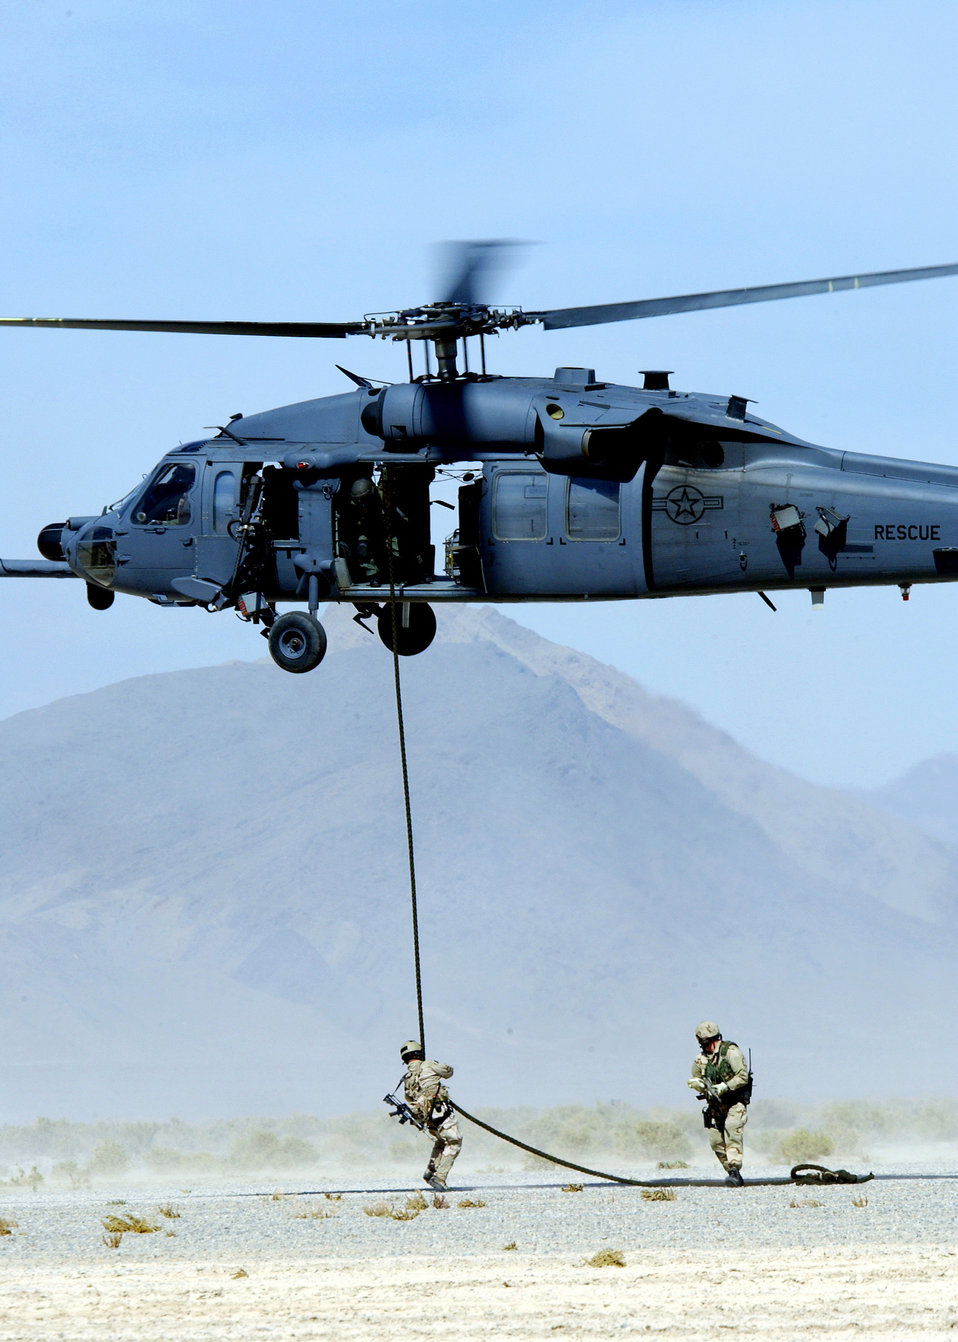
Mission not impossible

INDIAN SPRINGS AIR FORCE AUXILIARY FIELD, Nev. -- Two pararescuemen descend from an HH-60 Pave Hawk to